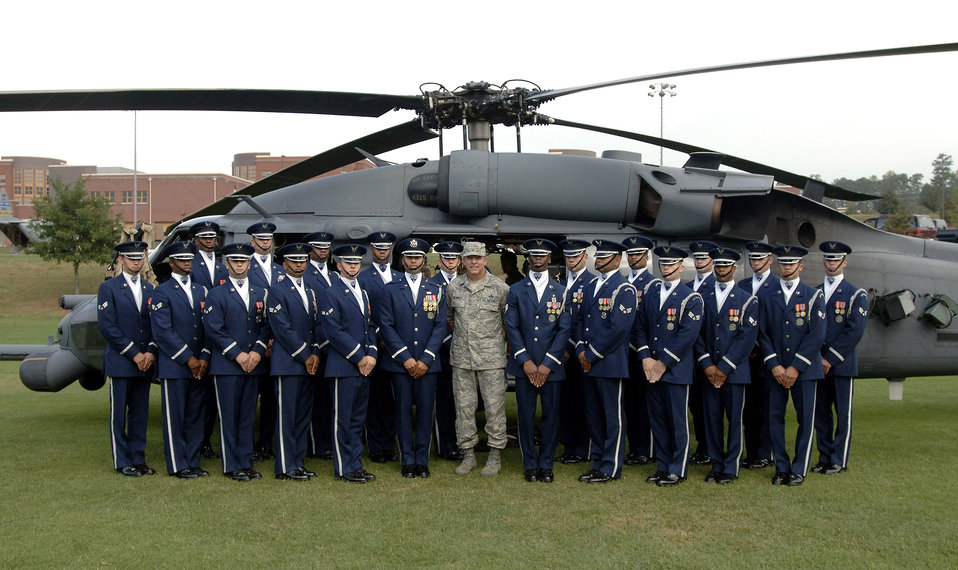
Airmen visit schools as part of Air Force Week Atlanta

Chief Master Sergeant of the Air Force Rodney J. McKinley (center) stands before a HH-60G Pave Hawk helicopter with the U.S. Air Force Honor Guard Drill Team at Marietta High School Oct. 9 in Marietta, Ga., as part of the Air Force Week Atlanta events.